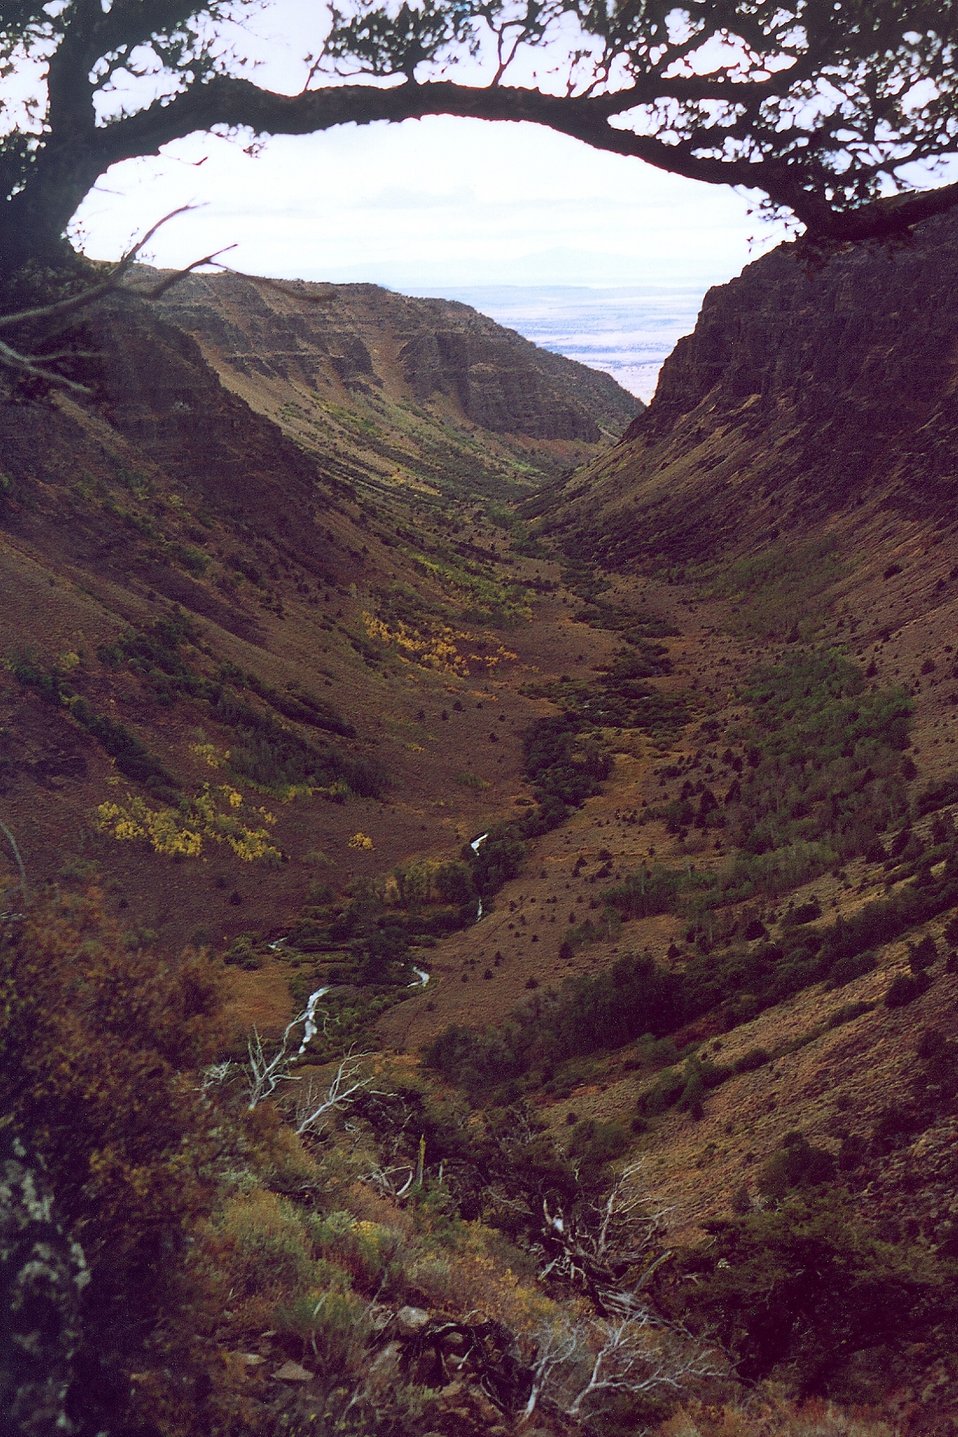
Little Blitzen near Pratt Overlook.